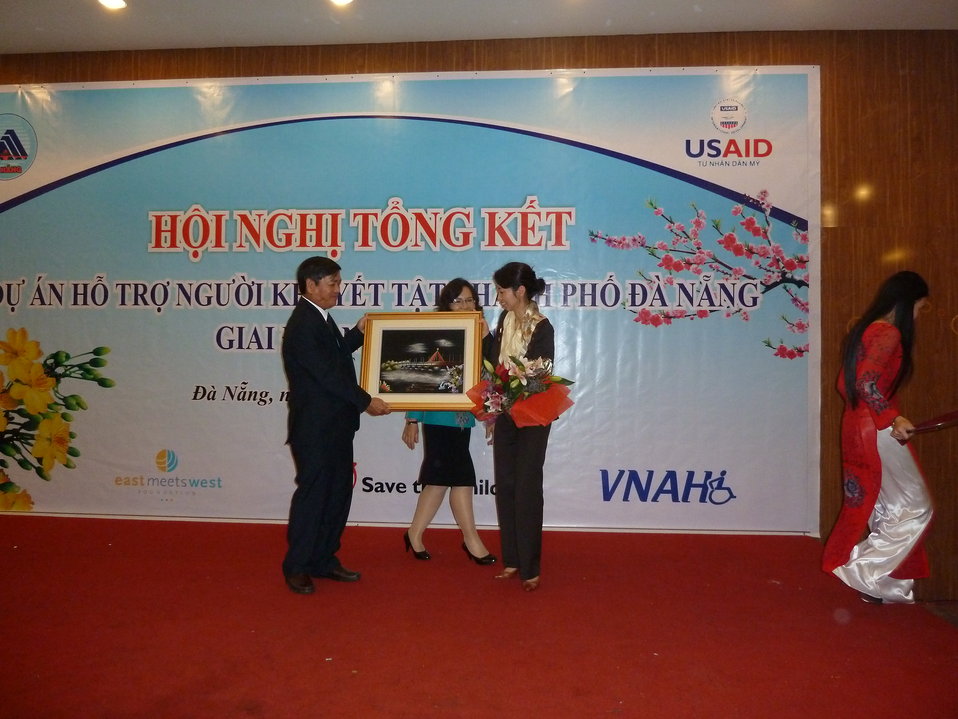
Danang Disability Workshop

Close out workshop of three-year USAID program in disabilities, Danang